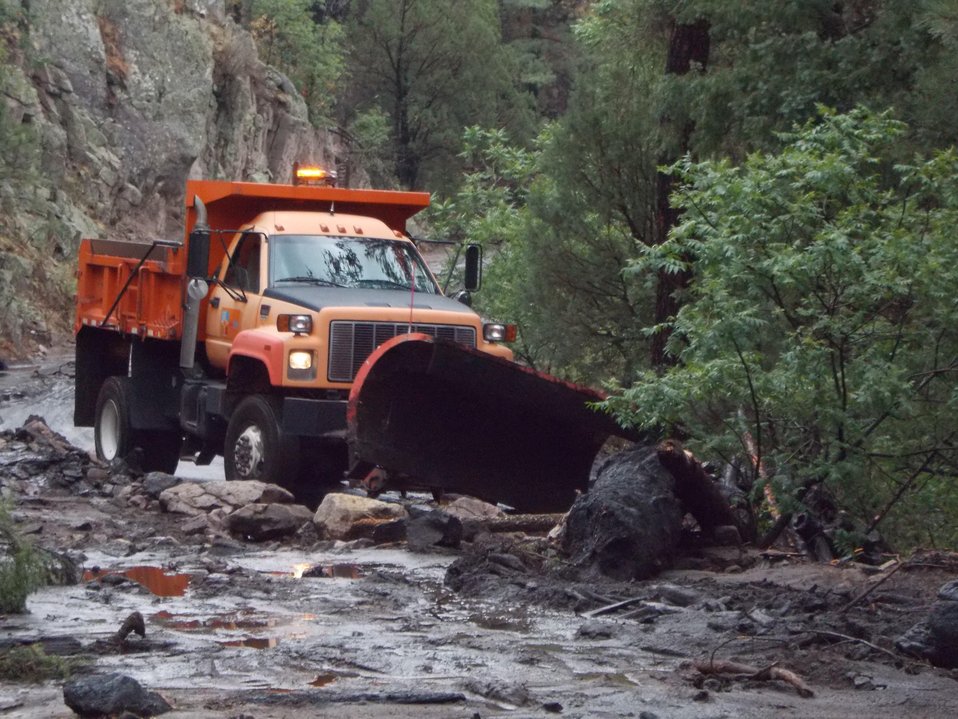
New Mexico Department of Transportation removes debris and sediment from Hwy 152 after a rainstorm near Kingston, NM. The debris is a result of the Silver Fire in Gila National Forest near Kingston, NM, which began on Jun. 7, 2013 by a lightning strike, has burned an estimated 138,705 acres and is 85% contained.